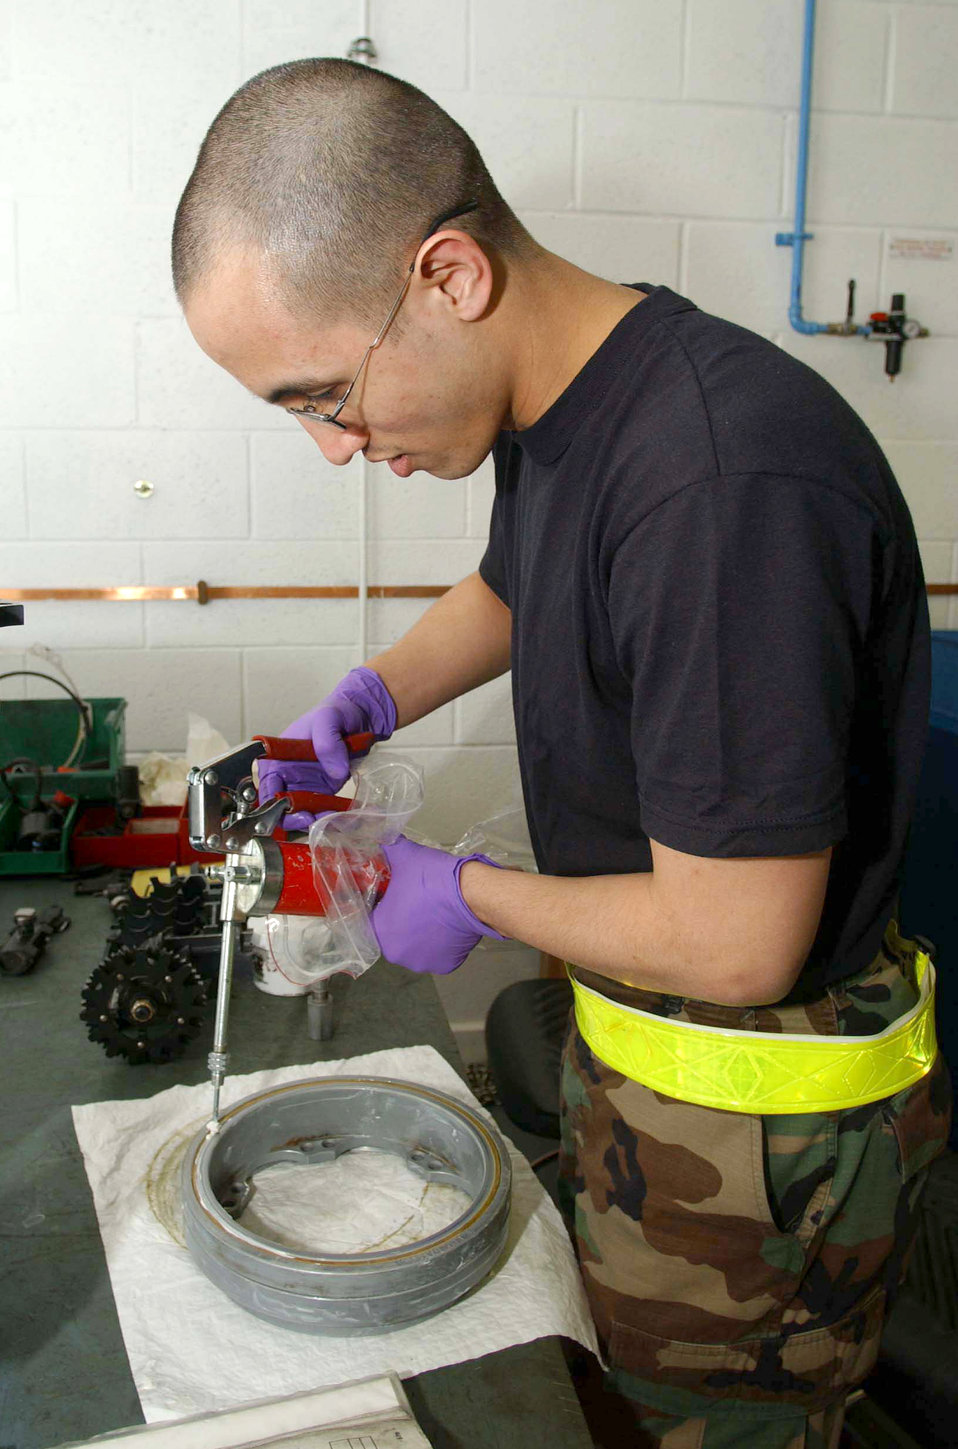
Gun lube

ROYAL AIR FORCE LAKENHEATH, England -- Senior Airman Rodney Retialo-Ross lubricates the bearing of an F-15E Strike Eagle six-barrel 20-mm rotary gun here April 7. Airman Retialo-Ross is an armament systems journeyman with the 48th Munitions Squadron here.